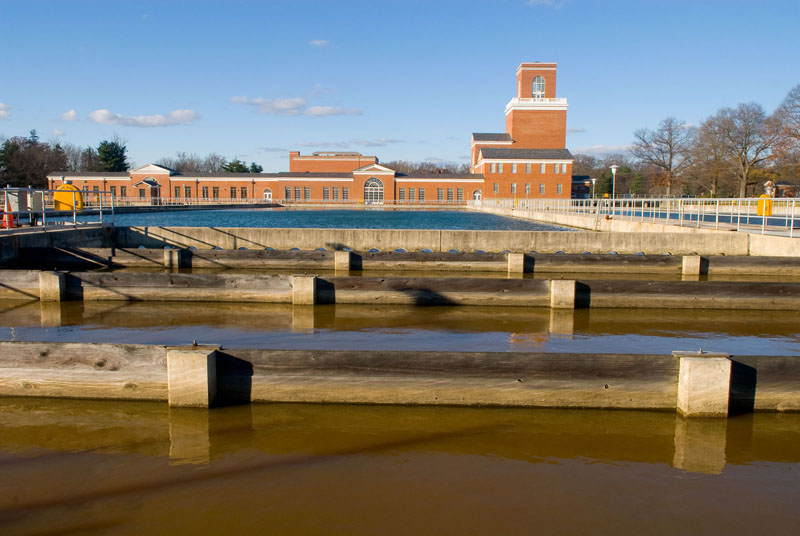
Laboratory testing facility at Washington Aqueduct, Washington, DC. 2006 USEPA Photo by Eric Vance